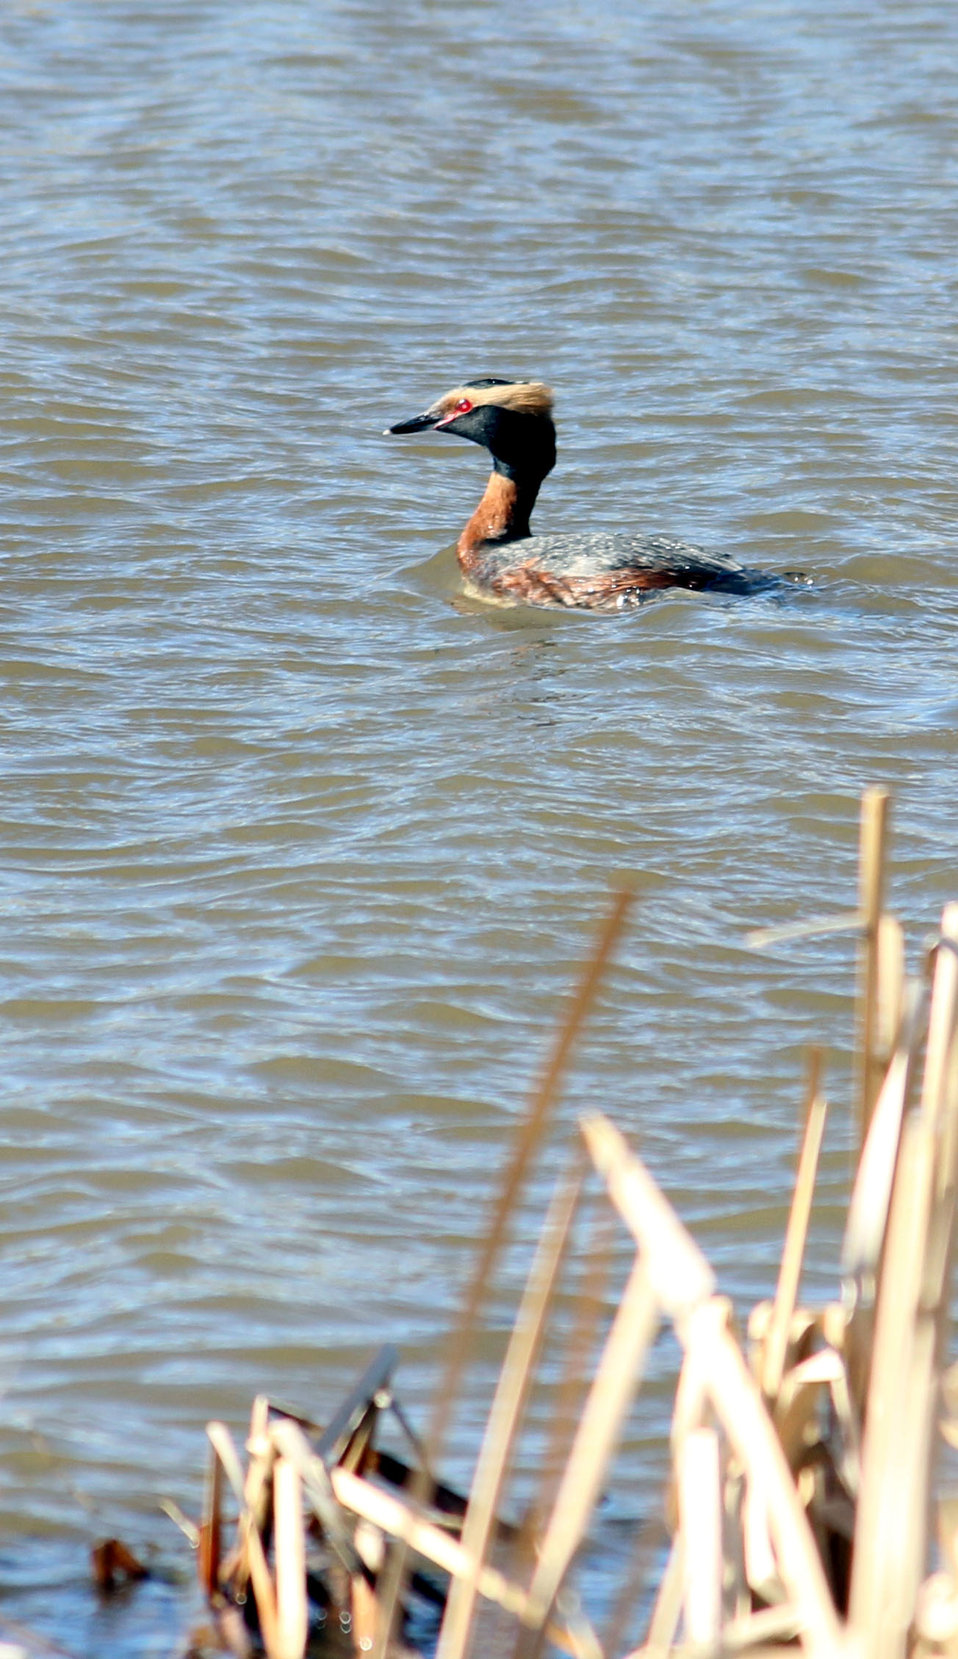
Horned Grebe

This waterbird, which can be easily mistaken for a duck, dives under water in the pursuit of its prey--small fish, insects, and crustaceans.